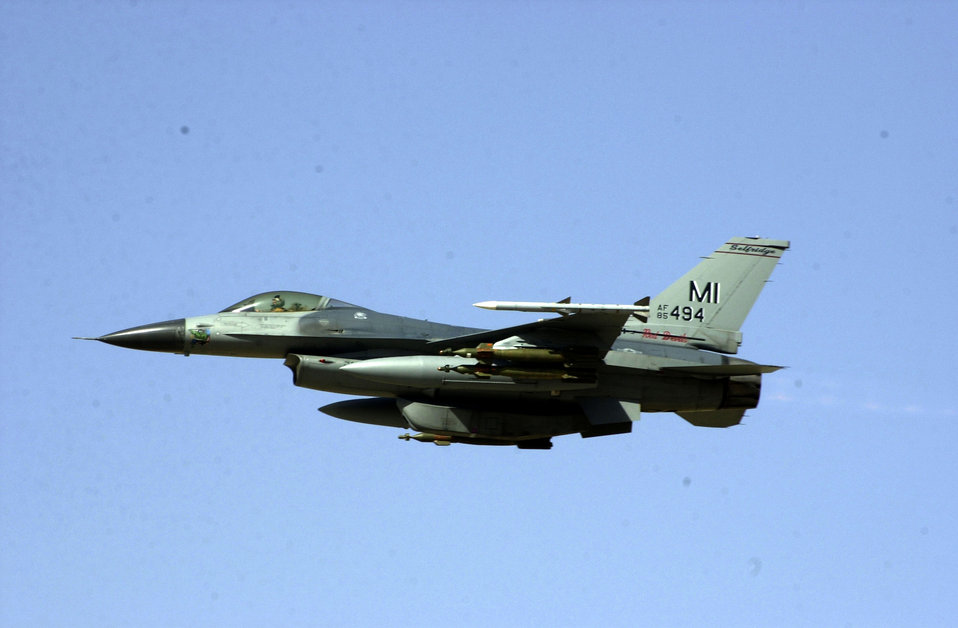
Freedom falcon

OVER IRAQ -- An F-16 Fighting Falcon flies through the sky here April 28 on a mission in support of Operation Iraqi Freedom. The F-16 is assigned to the Michigan Air National Guard's 107th Fighter Squadron at Selfridge Air National Guard Base.